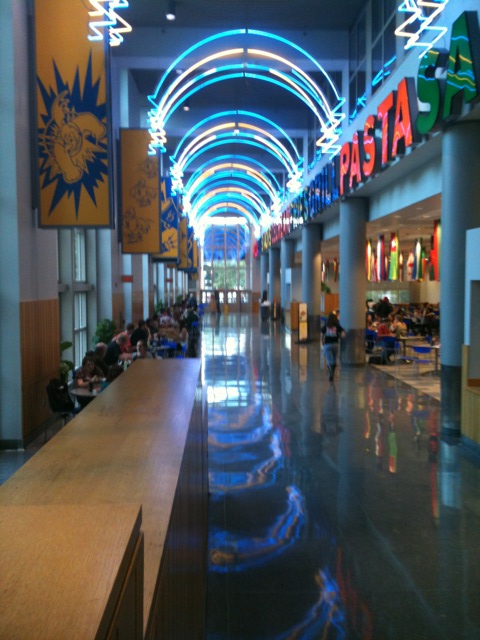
University of Delaware Student Center